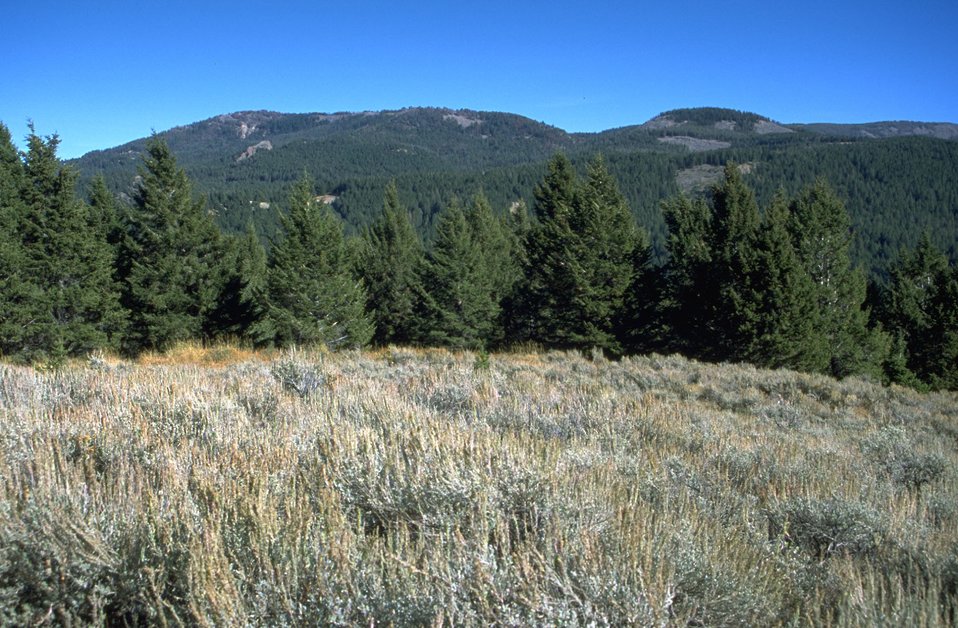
Sage Brush with forest and clear cut in background